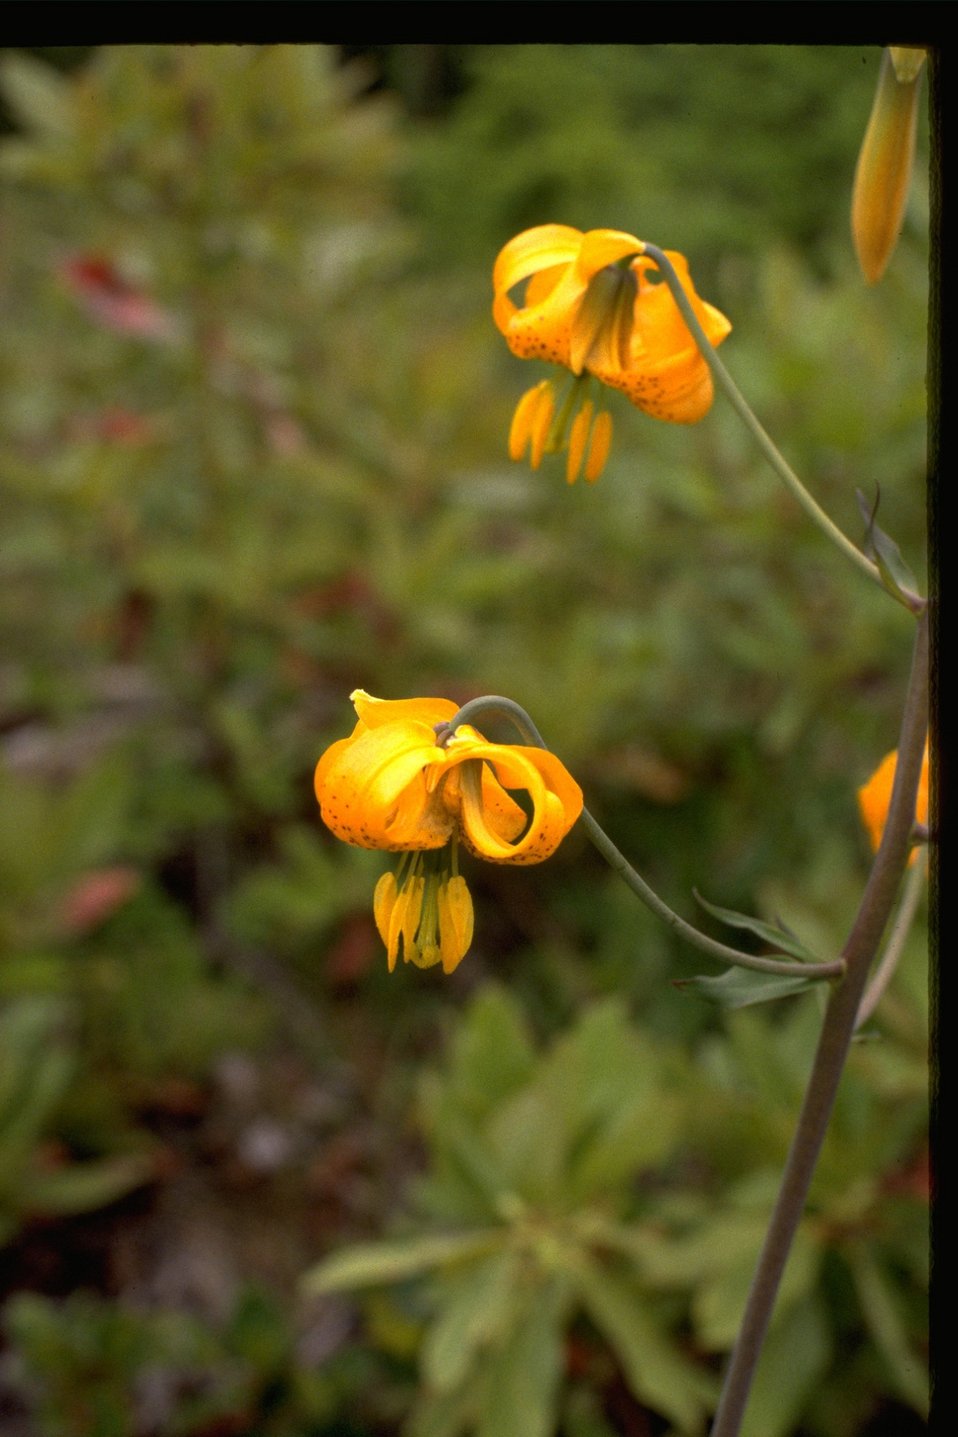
The Tiger Lily, or the Lilium tigrinum, of the Liliaceae family.